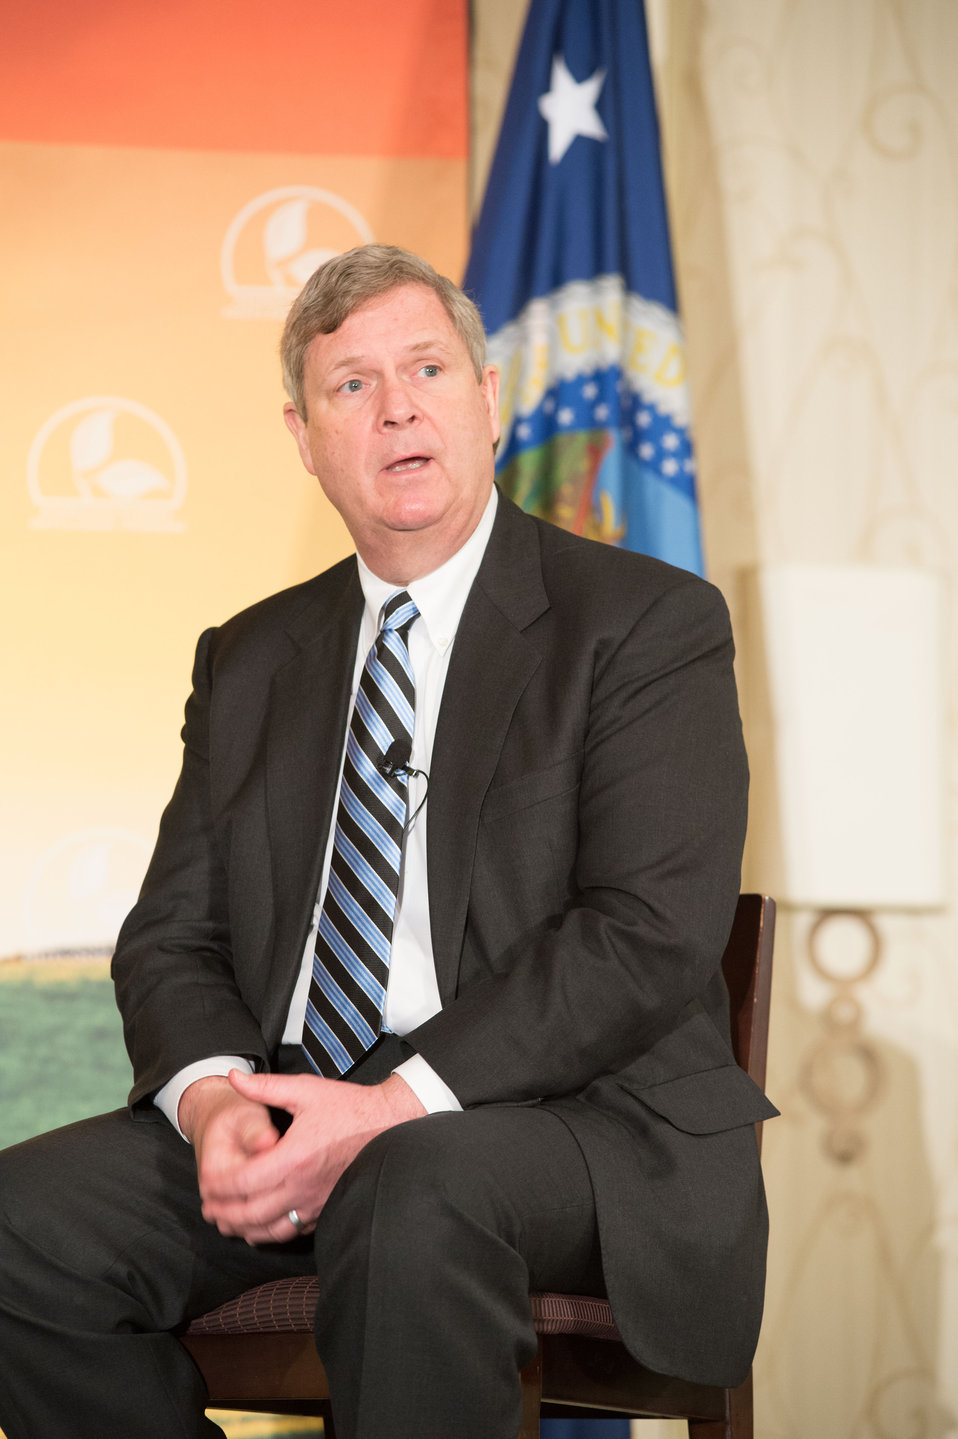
Agriculture Secretary Tom Vilsack responds to a question from audience to the Young Farmers - Unlimited Opportunities panel session at the 2014 Agricultural Outlook Forum in Arlington, VA., on Thursday, Feb. 20, 2014. The U.S. Department of Agriculture's (USDA) annual Agricultural Outlook Forum brings together the agricultural community to discuss policy, trade, science, rural development, and the economic outlook for the coming year. The Forum also focuses on forestry, health and nutrition issues, and the changing dynamics and face of rural America.